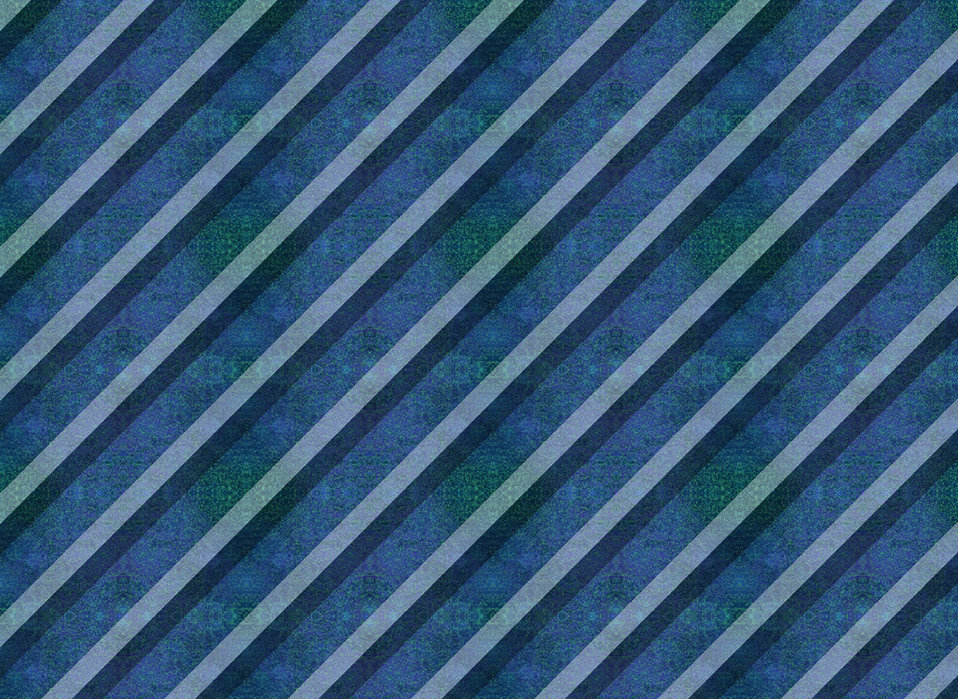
Blue stripped pattern

A blue background with diagonal strips.